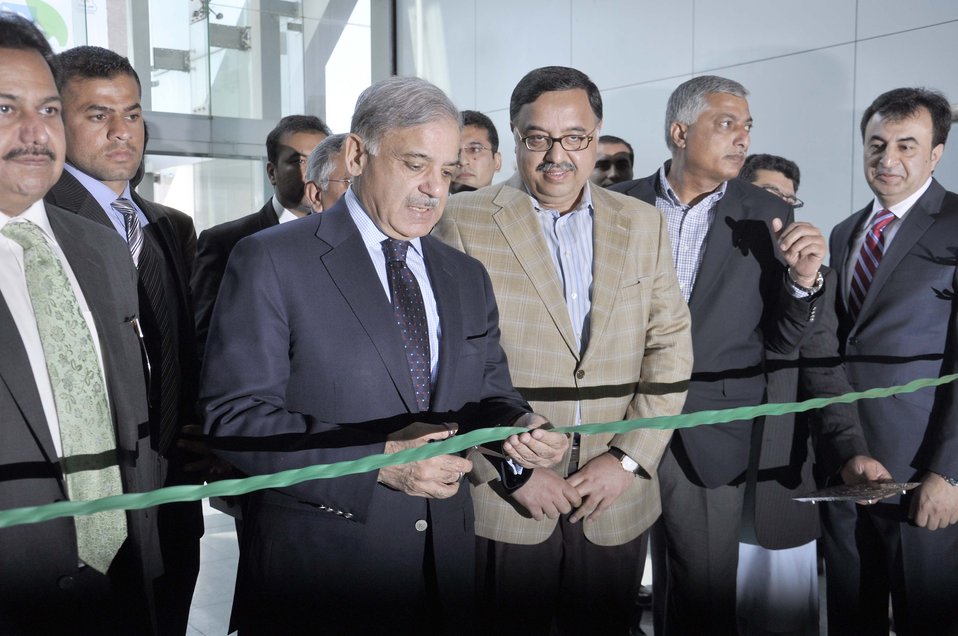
Punjab Chief Minister Muhammad Shahbaz Sharif inaugurating the Dawn Sarsabz Pakistan Agri Expo.